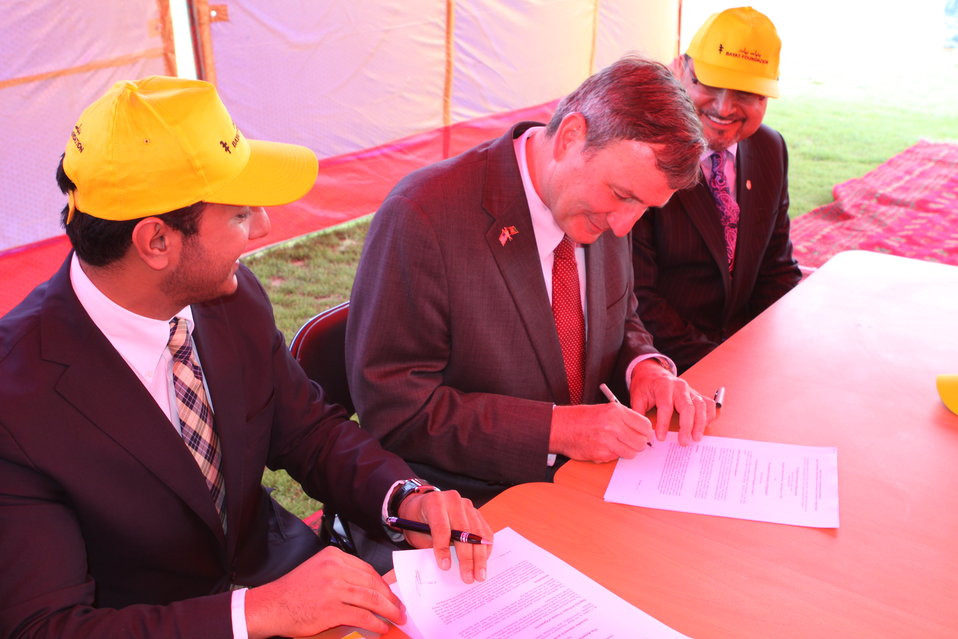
100526 AUAF Graduation 365